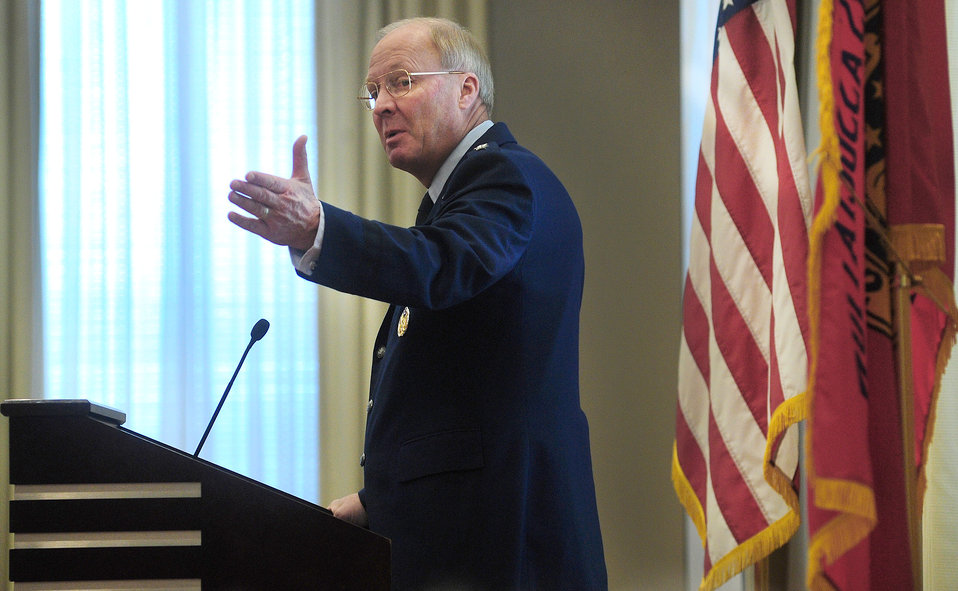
McKinley: Relationship between National Guard, parent components strongest ever

Air Force Gen. Craig R. McKinley addresses attendees Dec. 8, 2010, at the Reserve Officer's Association of America's Industry Day in Washington, D.C. During the event, General McKinley spoke on ways in which the Guard will continue to meet mission expectations in a budget constrained environment. General McKinley is the chief of the National Guard Bureau.